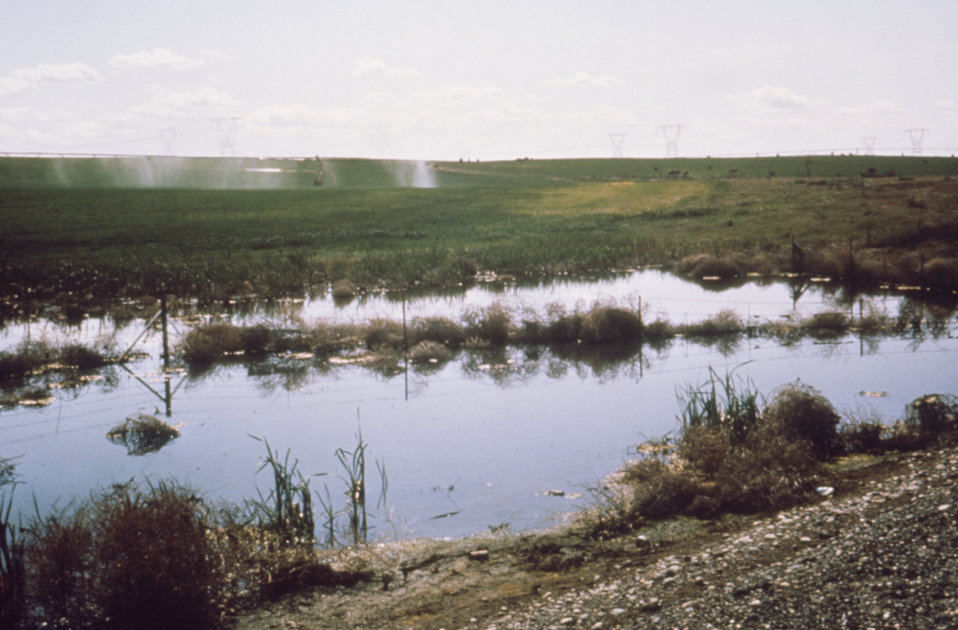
This photograph shows a Washington roadside irrigation pond with a number of sprinklers in the background.